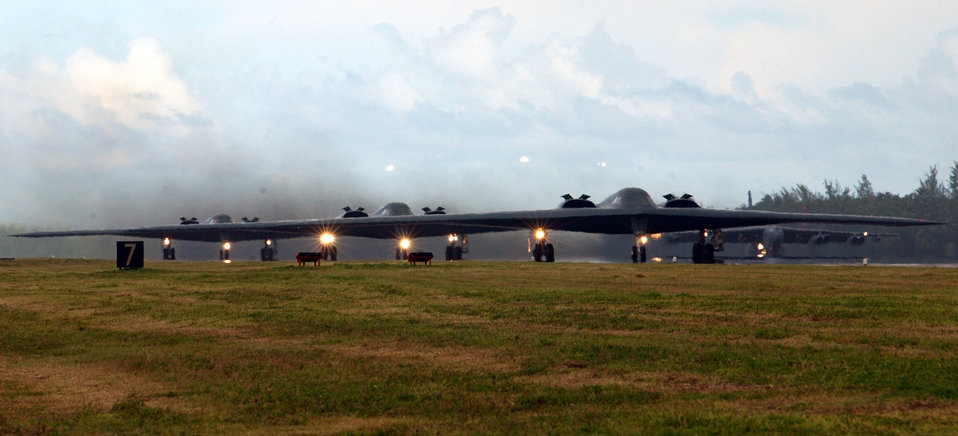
The air campaign begins

OPERATION IRAQI FREEDOM -- B-2 Spirit bombers taxi down the runway in preparation for the largest insertion of bombers since the Viet Nam conflict. This flight will mark the official beginning of Operation Iraqi Freedom.